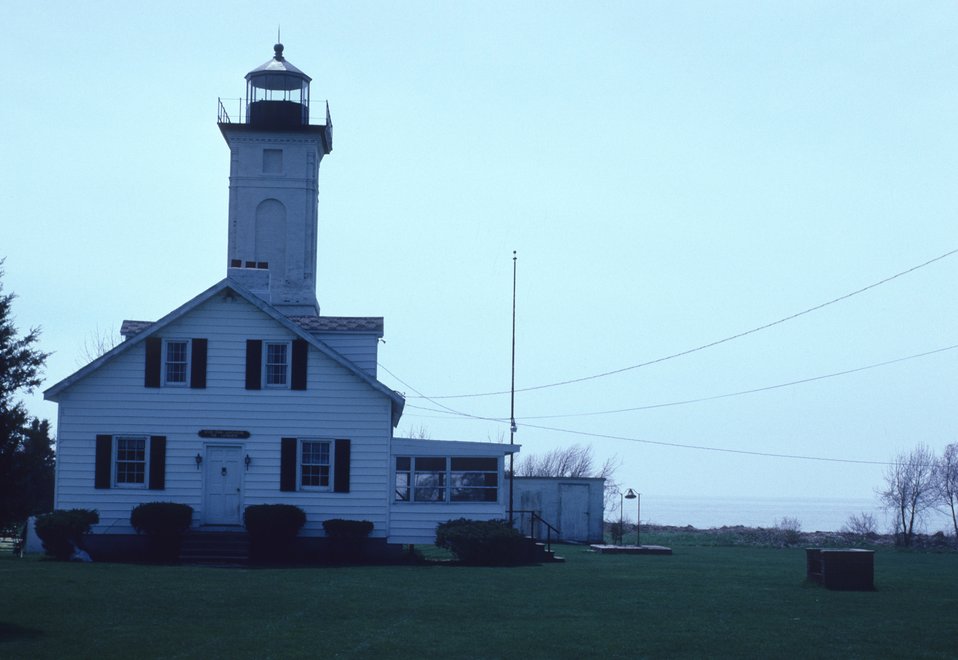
Stony Point Lighthouse along the St. Lawrence River